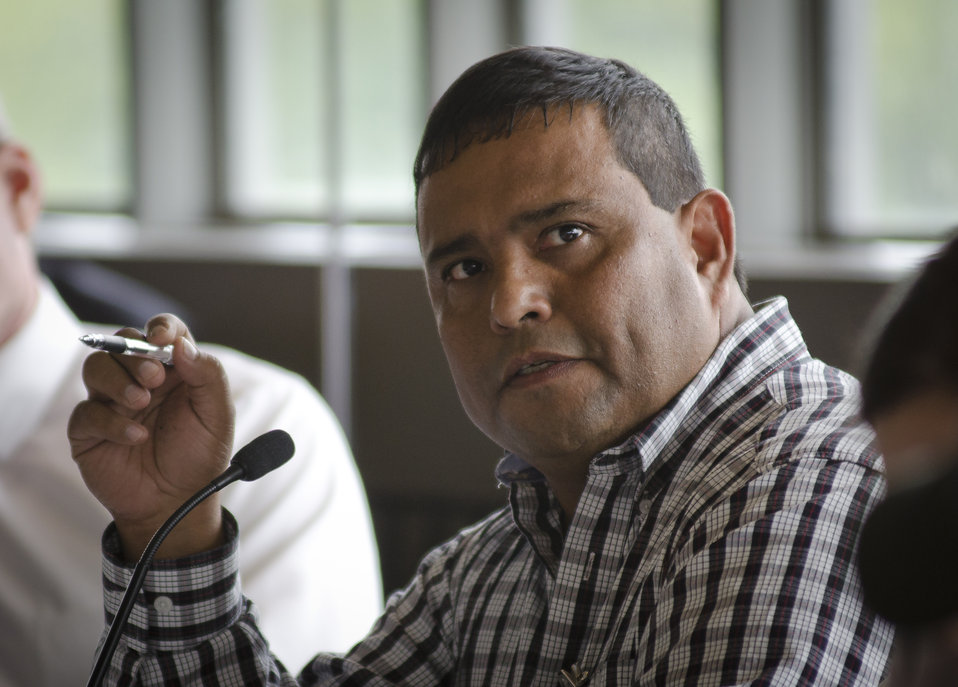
Natural Resources/Range Manager of the Shoshone-Bannock Tribes in Blackfoot, ID., Mark Wadsworth, speaking, was elected Chairman of the U.S. Department of Agriculture’s (USDA) Council for Native American Farming and Ranching (CNAFR) held at the National Museum of the American Indian in Washington, D.C., on Wednesday, Aug. 15, 2012. CNAFR was created to advise the Secretary on ways to eliminate barriers to participation for Native American Farmers and Ranchers in USDA programs. The Council was established as part of the Keepseagle settlement, and is conducted under the oversight of USDA's Office of Tribal Relations under the Office of the Secretary of Agriculture.